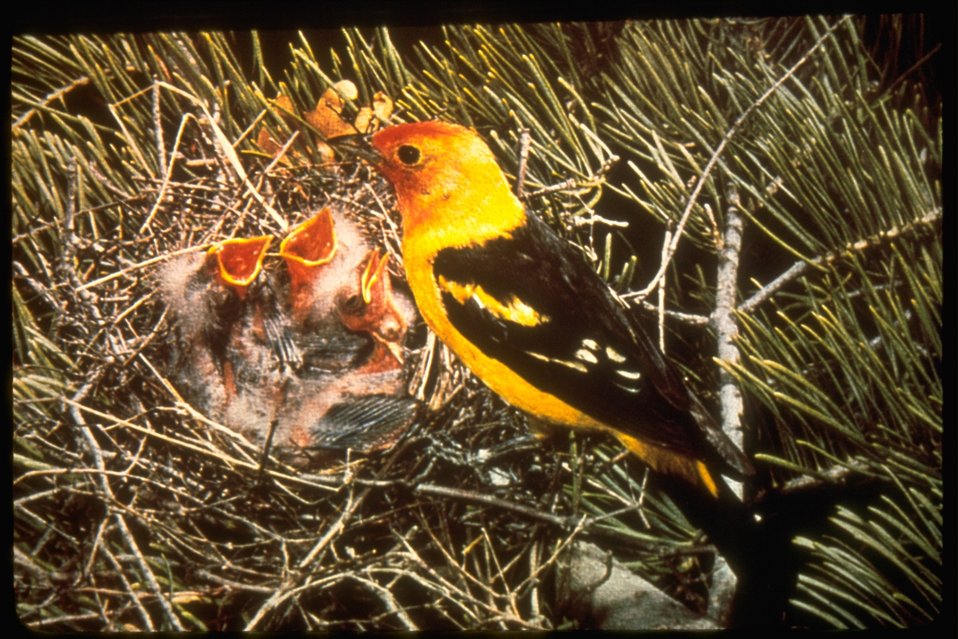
Red-footed, yellow-breasted, and black-winged Song Bird is feeding her young.